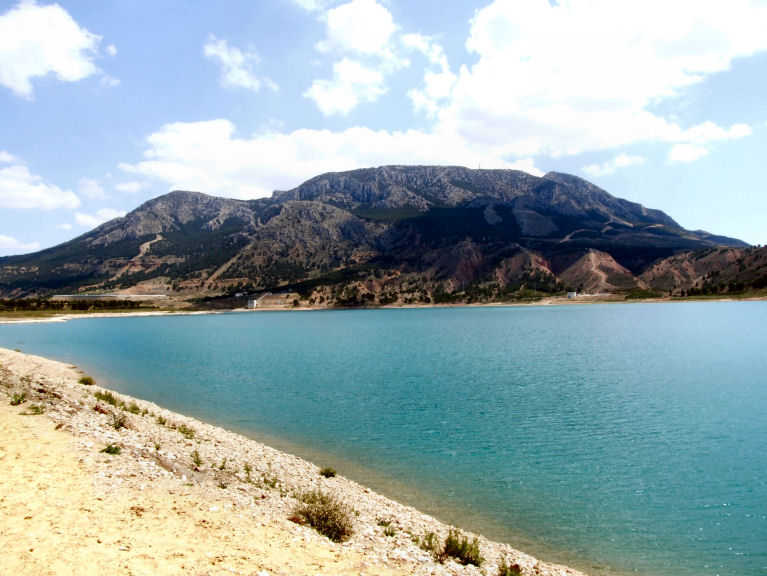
Jabalcón is a mountain near the city of Baza in the province of Granada in Spain.